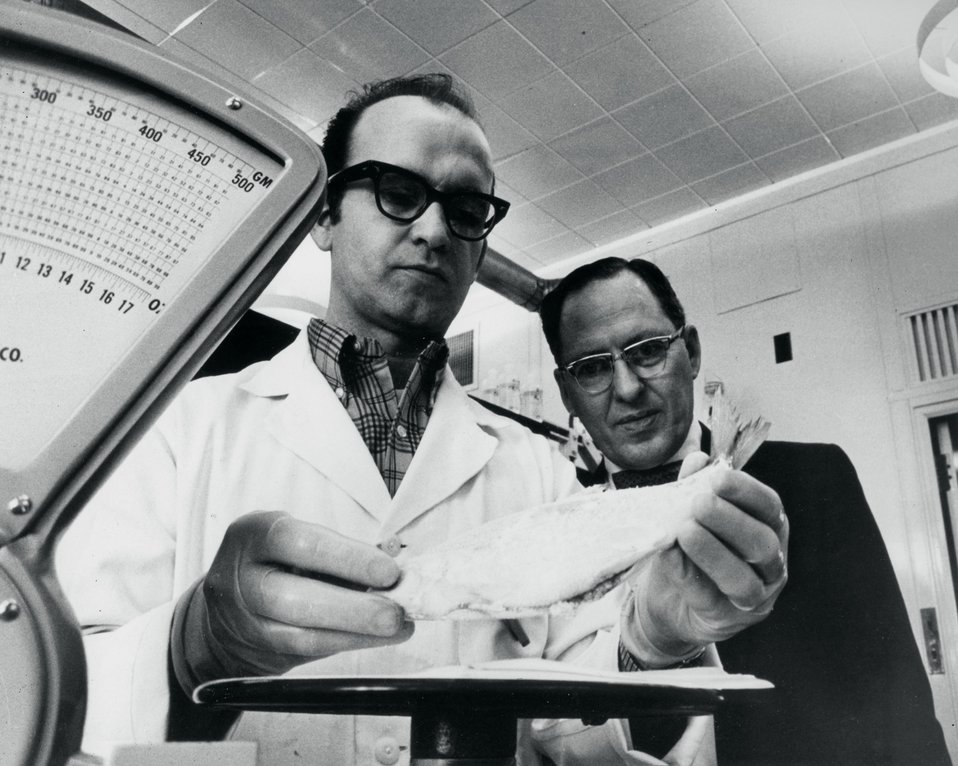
A fish taken from Lake Michigan is 'weighed-in' at Argonne.
C.1970